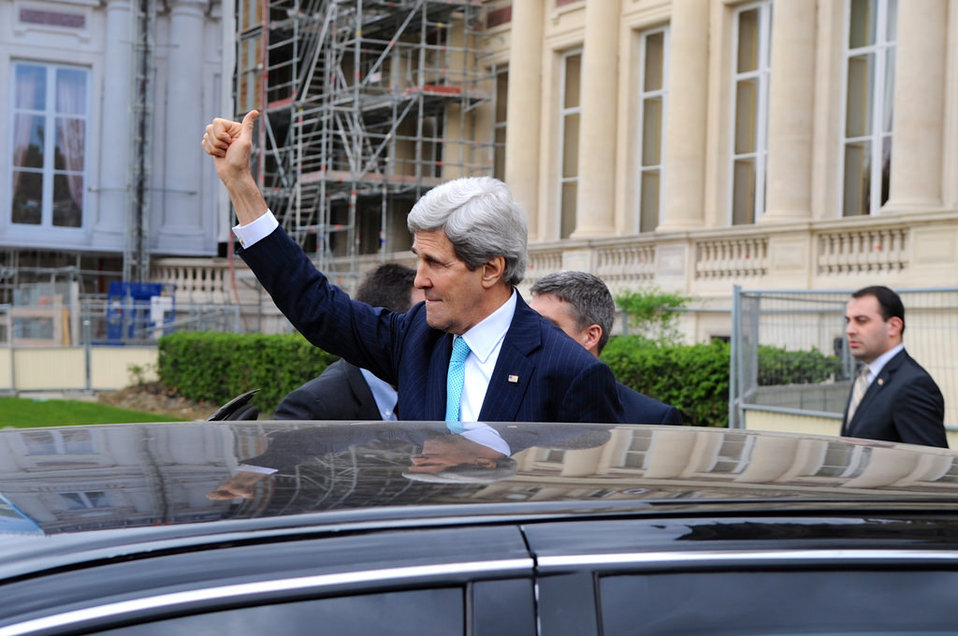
Secretary Kerry Acknowledges Pro-Ukraine Supporters Outside French Foreign Ministry

U.S. Secretary of State John Kerry gives a thumbs up to supporters of Ukraine who shouted encouragement to him as he left the Quai d'Orsay - the French Foreign Ministry - in Paris on March 30, 2014, to meet with Russian Foreign Minister Sergey Lavrov about Ukraine.